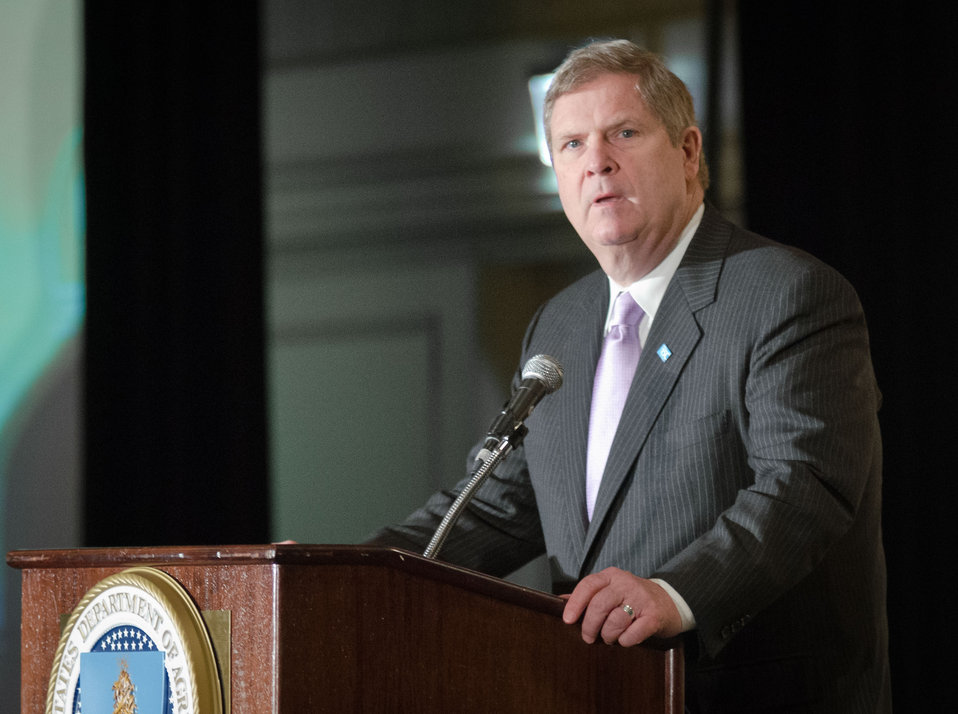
Agriculture Secretary Tom Vilsack makes remarks at the 2012 Agricultural Outlook Forum, “Moving Agriculture Forward” in Arlington, VA.. on Thursday, February 23, 2012.